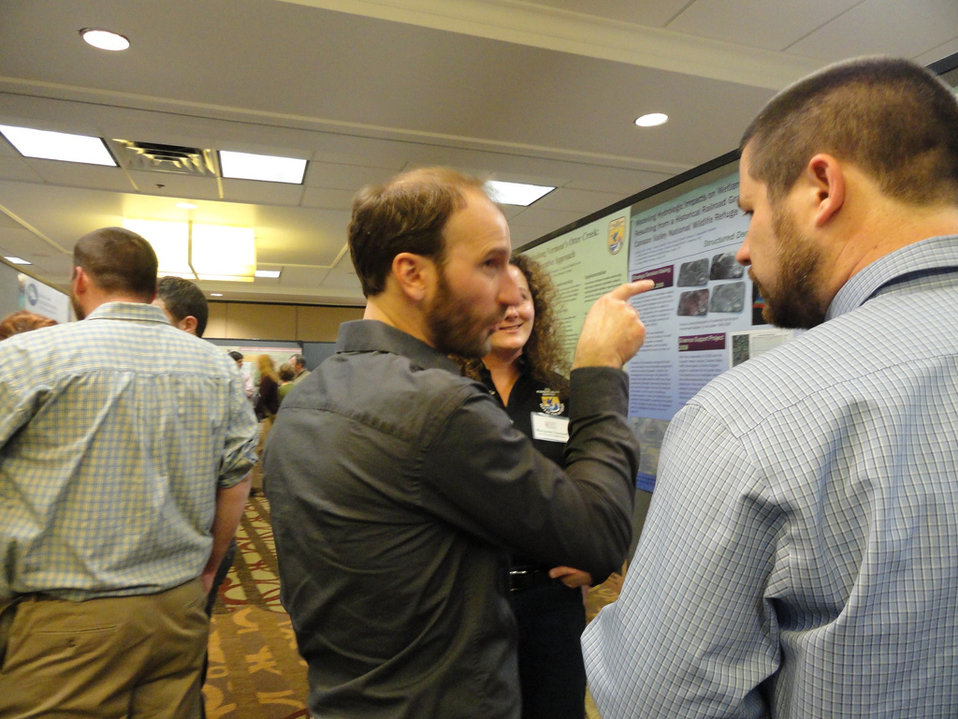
Poster Session

Biologists explaining their poster at the Tuesday night poster session at the Northeast Region Biologists Conference.